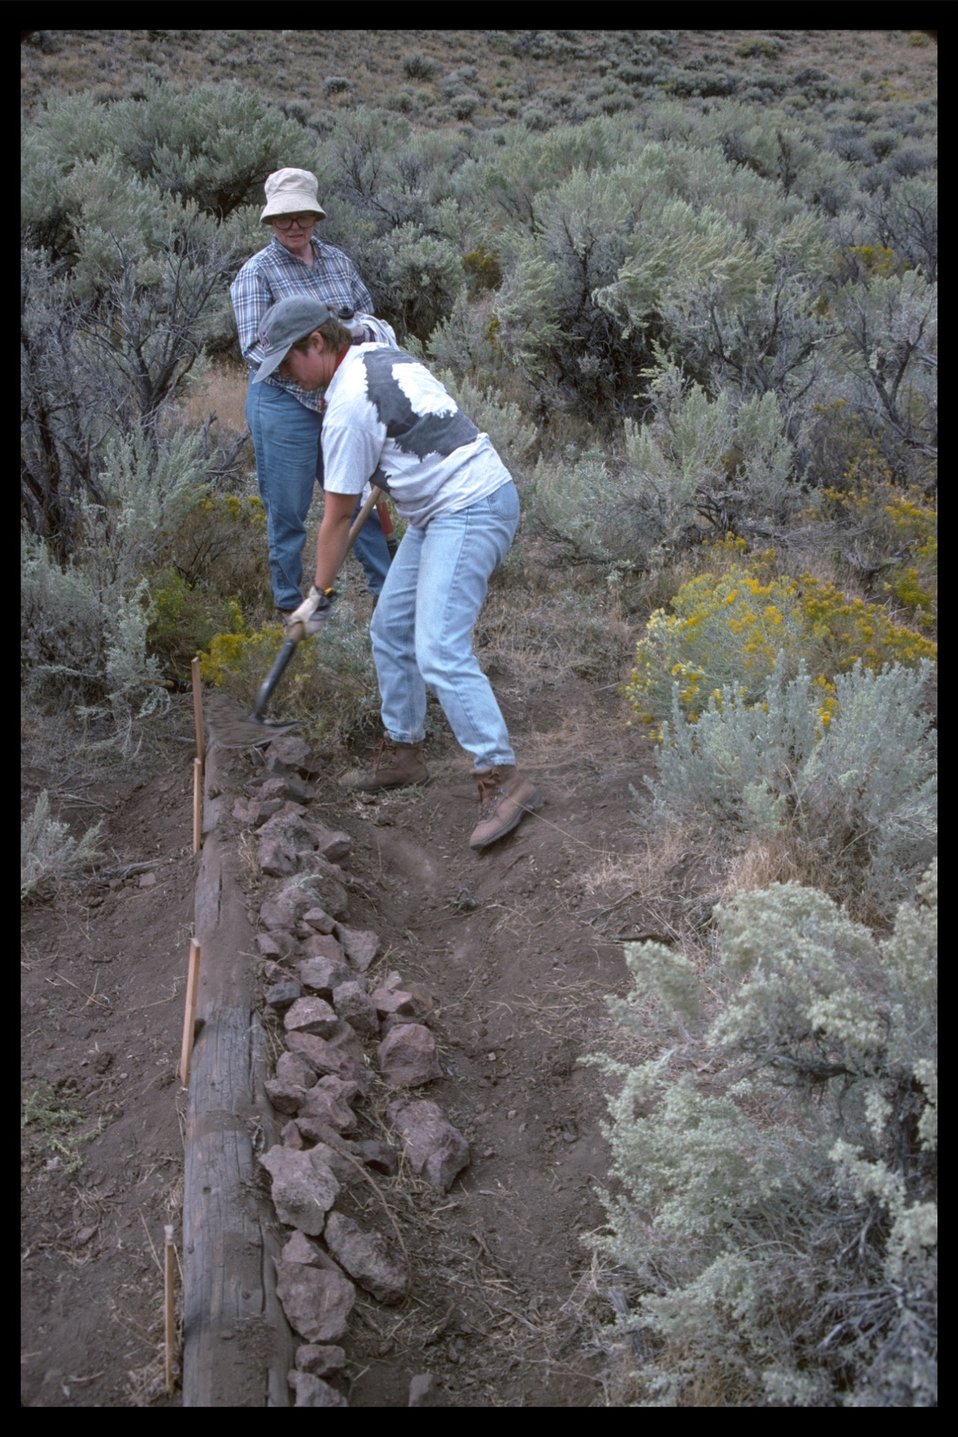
Pueblo Mountain WSA, a group photo of Sierra Club volunteers placing wooden water bars near Arizona Creek. (WSA 2-81)